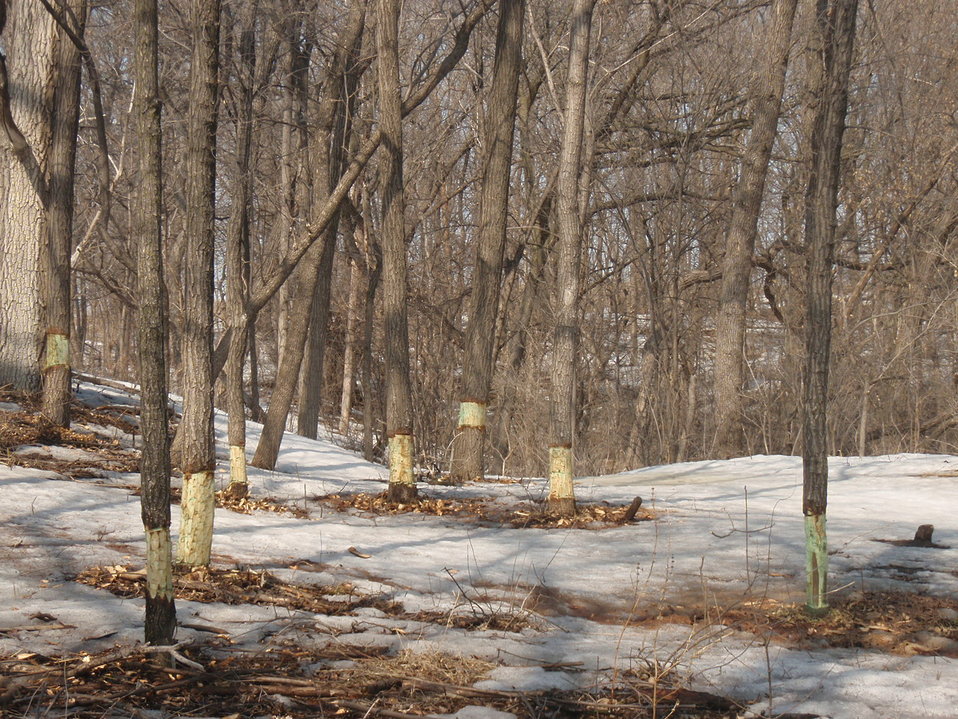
Girdled Trees Decay Faster

Some trees were girdled near the base to initiate their decay.